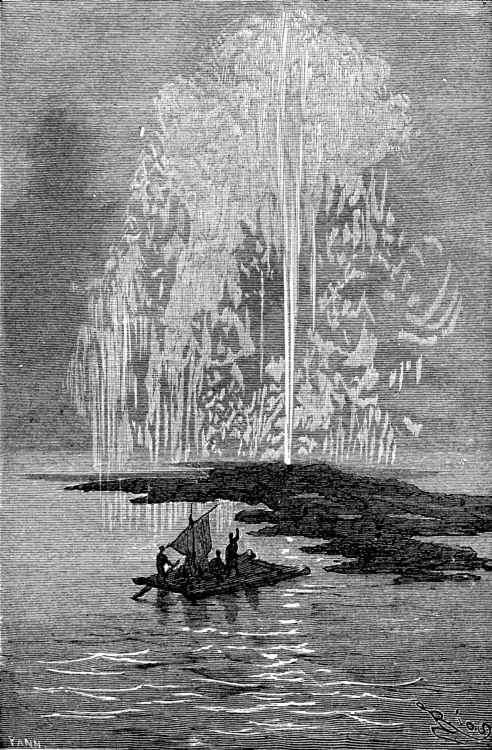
An ilustration from the novel 'Journey to the Center of the Earth' by Jules Verne painted by Édouard Riou. Polski: Ilustracja powieści Juliusza Verne'a 'Wyprawa do wnętrza Ziemi' autorstwa Édouarda Riou. Français : 'Voyage au centre de la Terre', Édouard Riou. Français : Le geyser s’élève majestueusement.